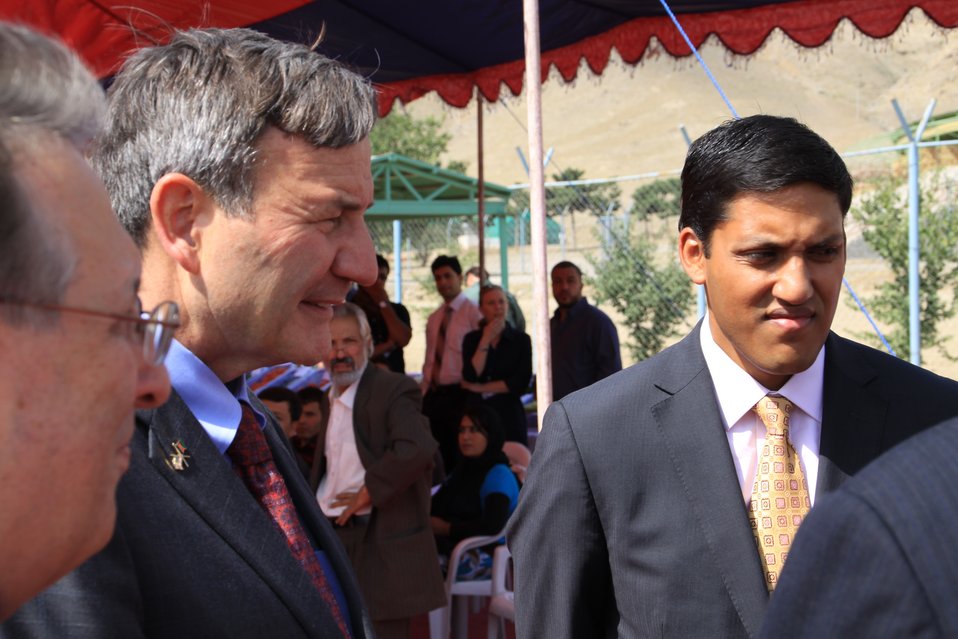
Badam Bagh Farm